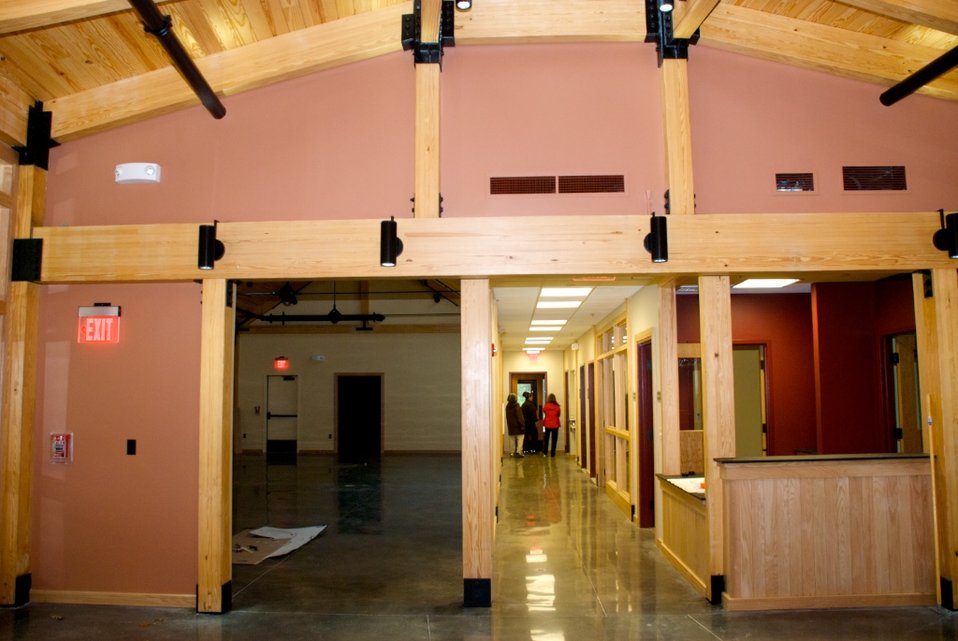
Assabet River NWR Visitor Center

In 2010, the U.S. Fish and Wildlife Service will open the doors to a new energy efficient administrative and visitor center for the Eastern Massachusetts National Wildlife Refuge Complex at the Assabet River refuge in Sudbury, Mass.

American Recovery and Reinvestment Act funding will support the fabrication and installation of exhibits that will enhance visitors' experience with information about the refuge's wildlife, habitats, and recreational opportunities.